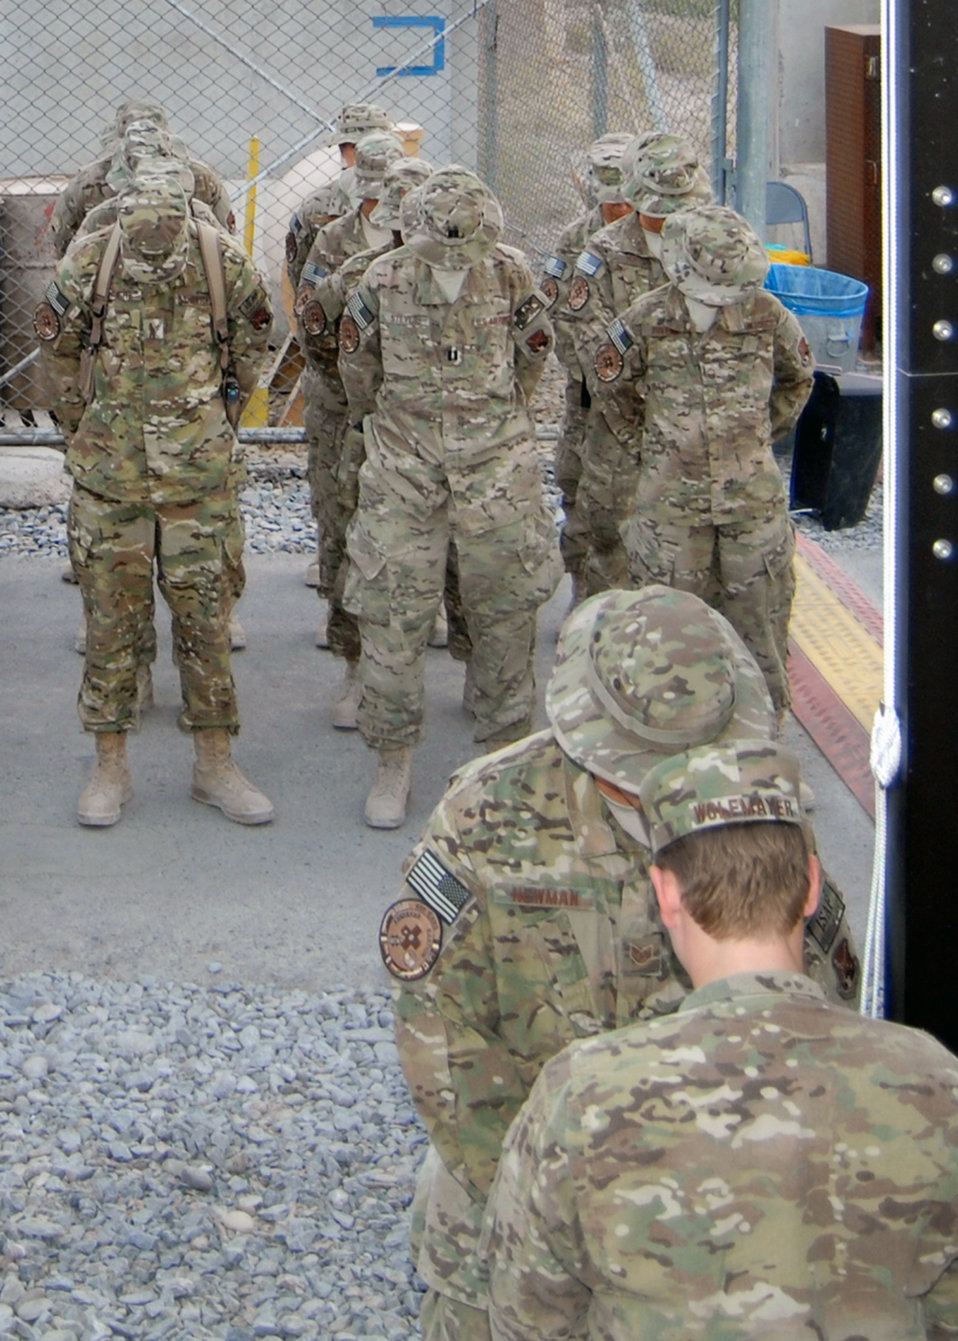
Raising the Flag

Airmen with the 651st Expeditionary Aeromedical Evacuation Squadron bow their heads in prayer during a retreat ceremony held Kandahar Airfield, Afghanistan, Aug 4, 2012.